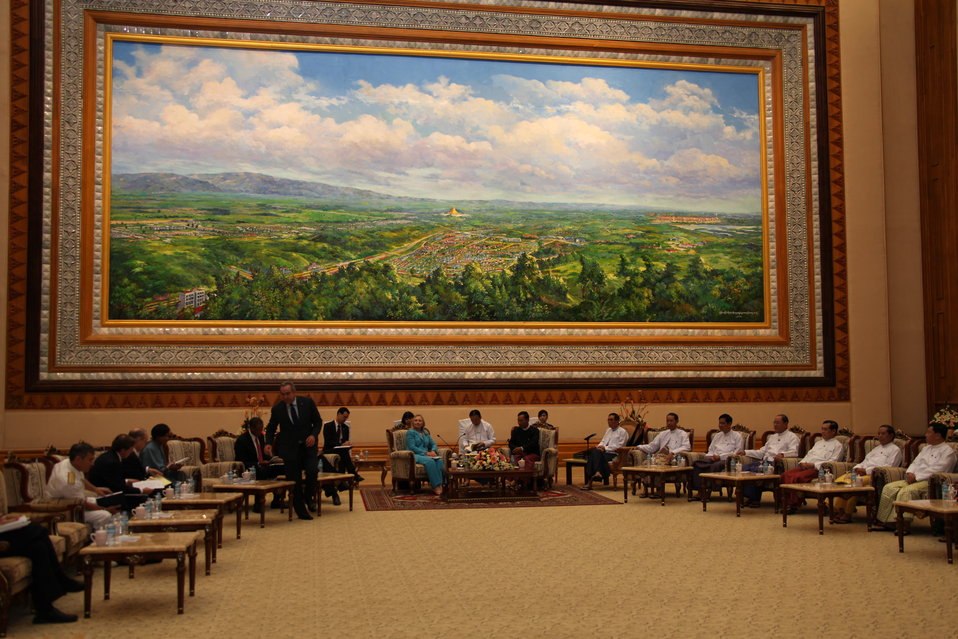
Secretary Clinton Meets With Speaker of the Lower House of Parliament U Shwe Mann

U.S. Secretary of State Hillary Rodham Clinton meets with with Speaker of the Lower House of Parliament U Shwe Mann at the Burmese Parliament in Nay Pyi Taw, Burma, on December 1, 2011. State Department photo/ Public Domain]